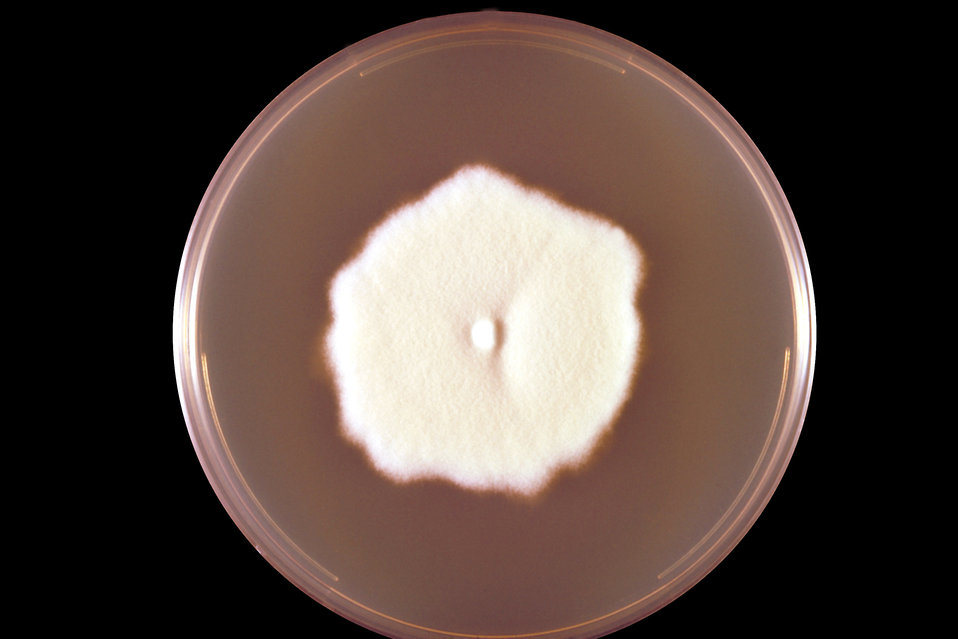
This is a top view of a Sebouraud's dextrose agar plate culture growing a colony of Microsporum persicolor fungus.